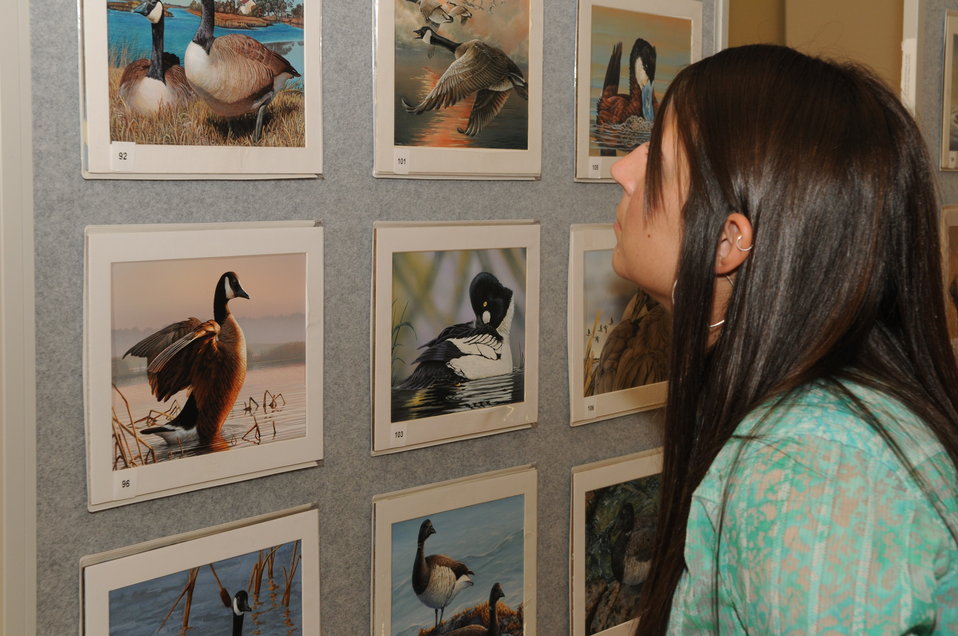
Artwork Viewing

The U.S. Fish & Wildlife Service sponsored the 2012 Federal Duck Stamp Art Contest September 28 and 29 in Ogden, Utah, at Weber State University. A panel of five judges was responsible for choosing the art work used to design the 2013-2014 Migratory Bird Hunting and Conservation Stamp.